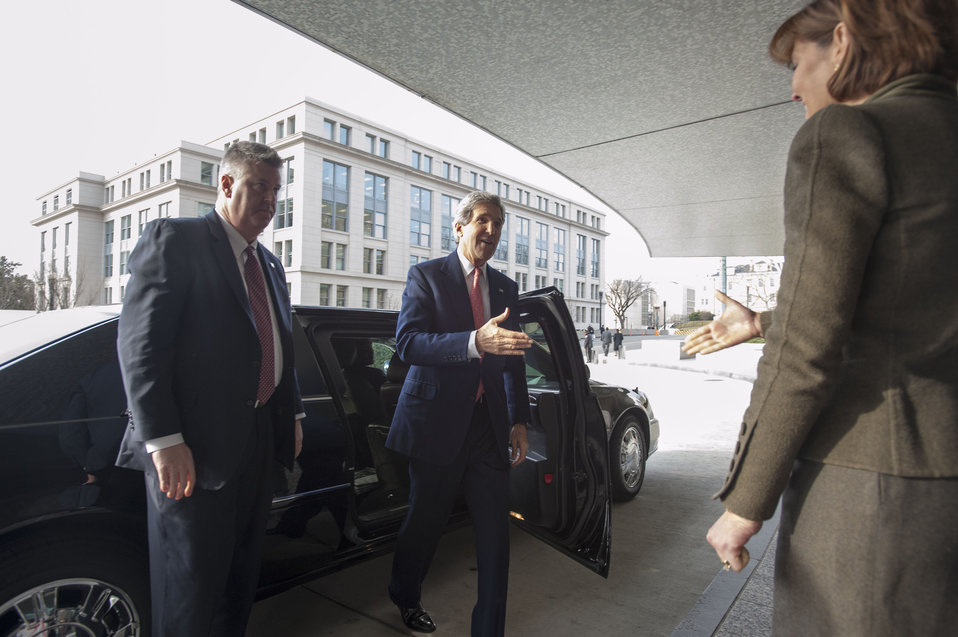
Secretary Kerry is Welcomed By Ambassador Marshall

U.S. Secretary of State John Kerry is greeted by Ambassador Capricia Penavic Marshall, Chief of Protocol, on his first day at the U.S. Department of State in Washington, D.C., February 4, 2013.